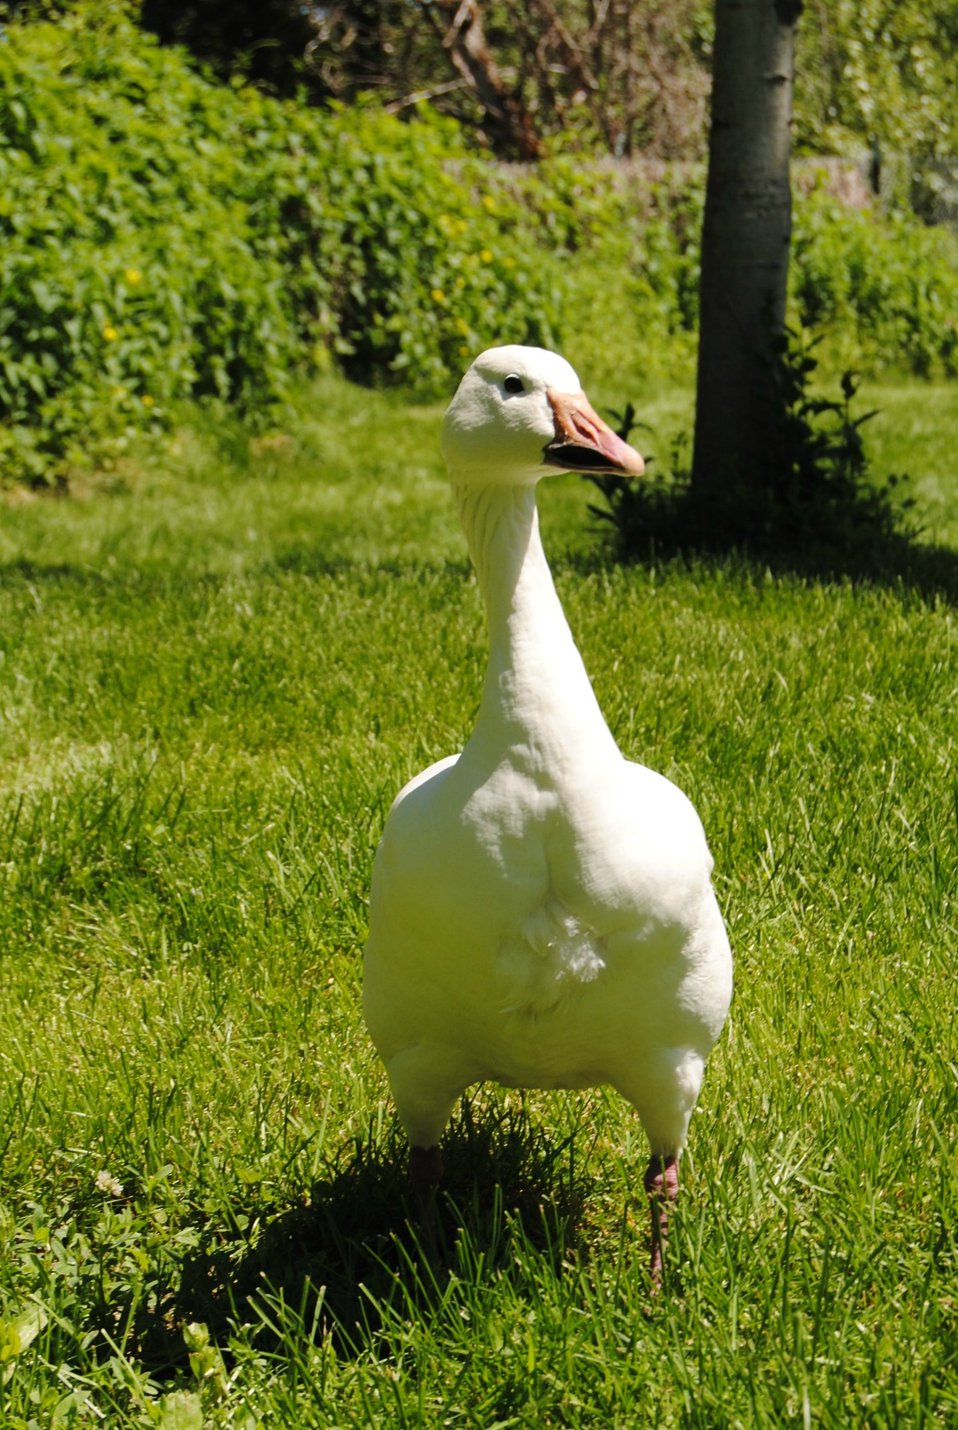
Week 2, Montana Waterfowl Foundation, Ronan, MT

A snowgoose patrols the grounds of the Montana Waterfowl Foundation.